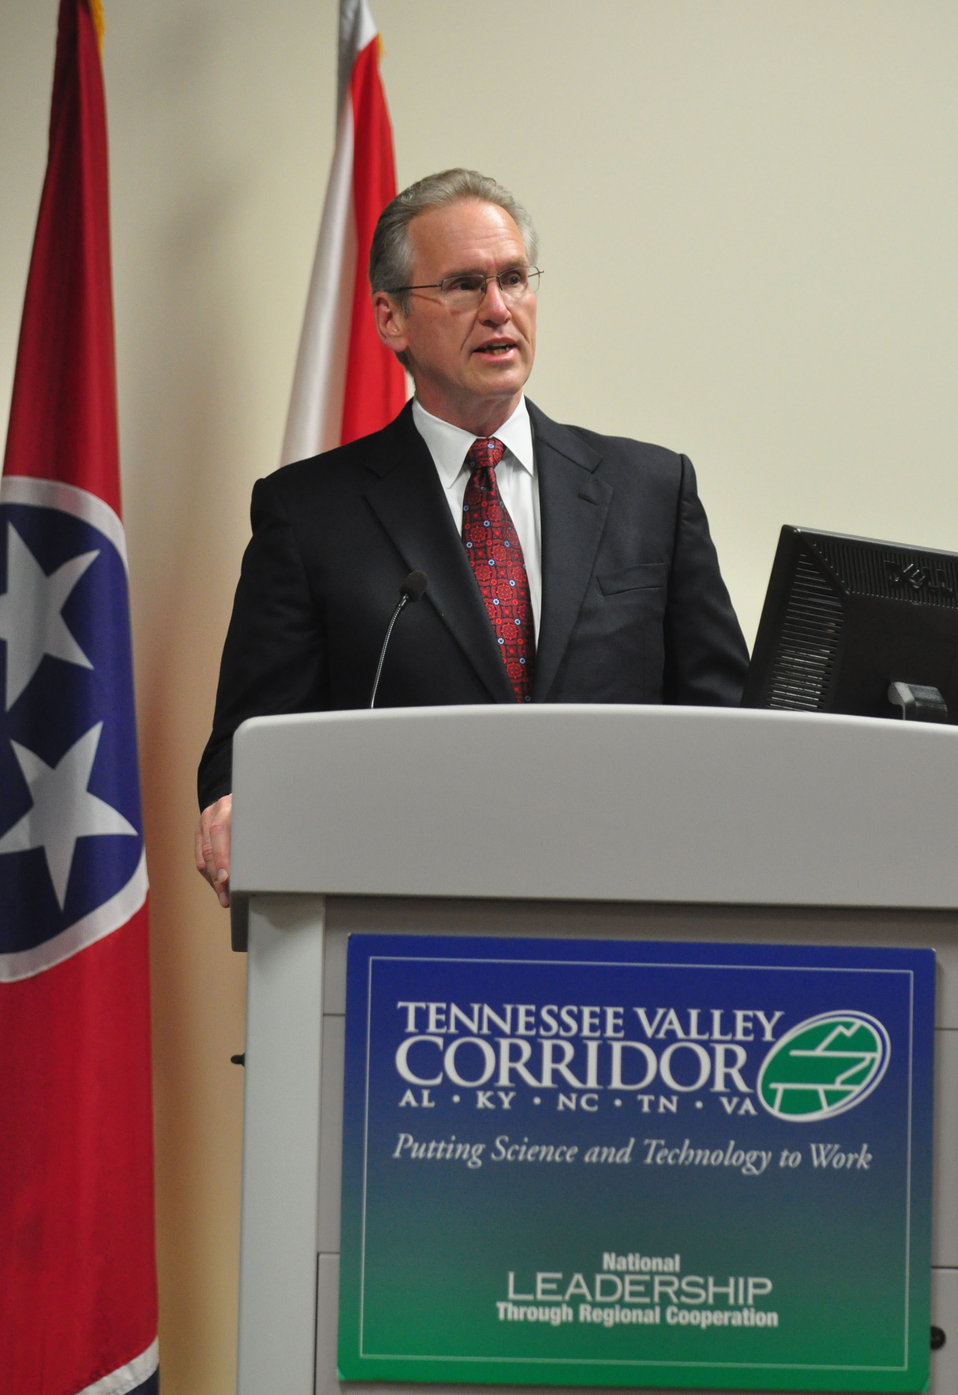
Tennessee Valley Corridor Summit Oak Ridge

13-062 DOE photo Lynn Freeny 5-29-2013 Oak Ridge Tennessee